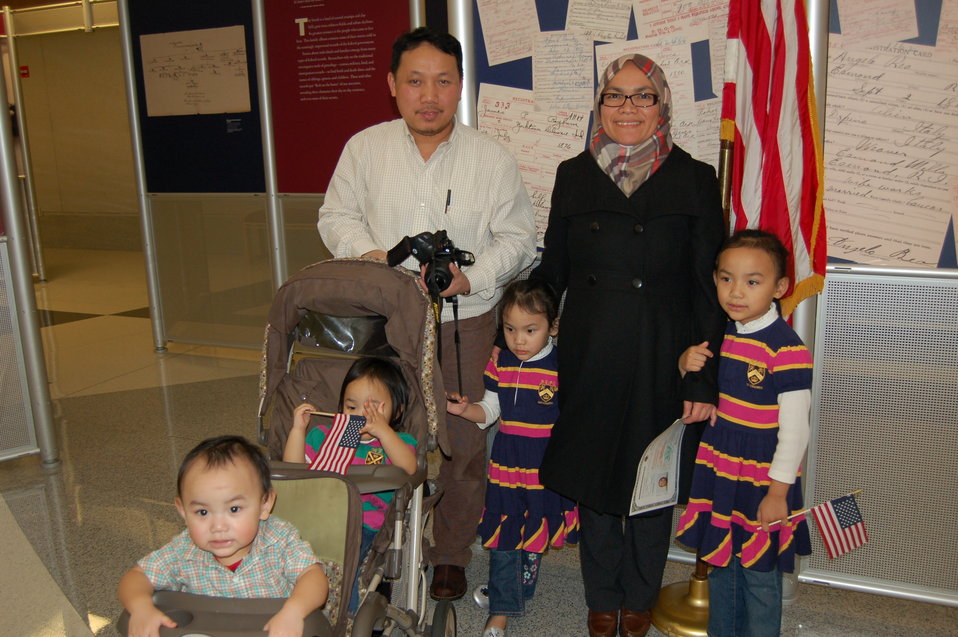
New Citizens